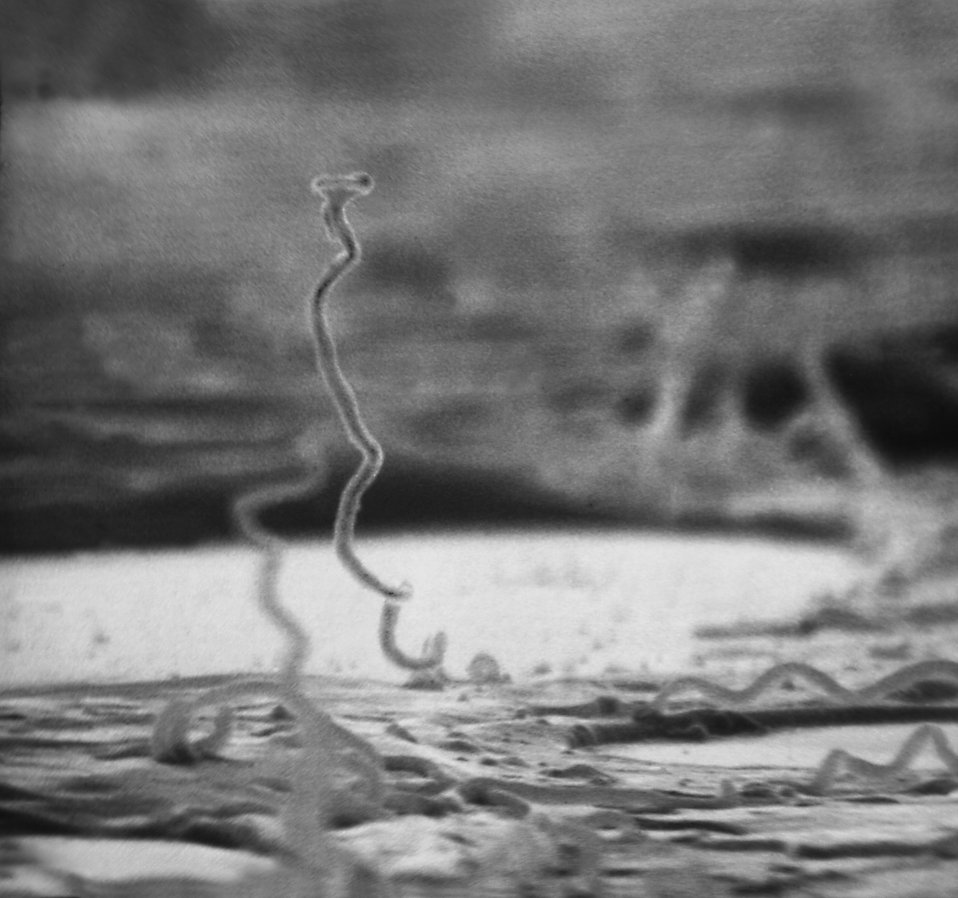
Electron micrograph of Treponema pallidum on cultures of cotton-tail rabbit epithelium cells (Sf1Ep).